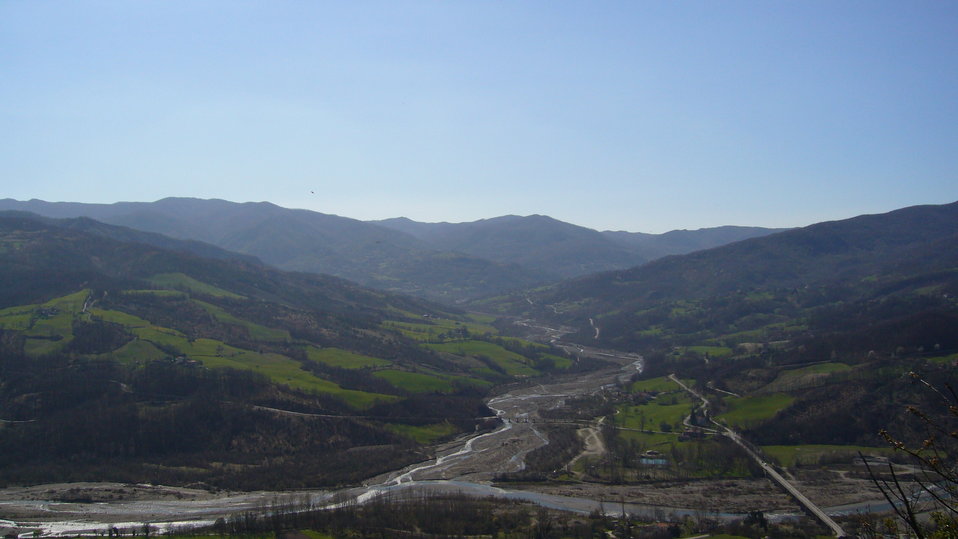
Italiano: La valle di Ceno dal castello di Bardi Ceno River